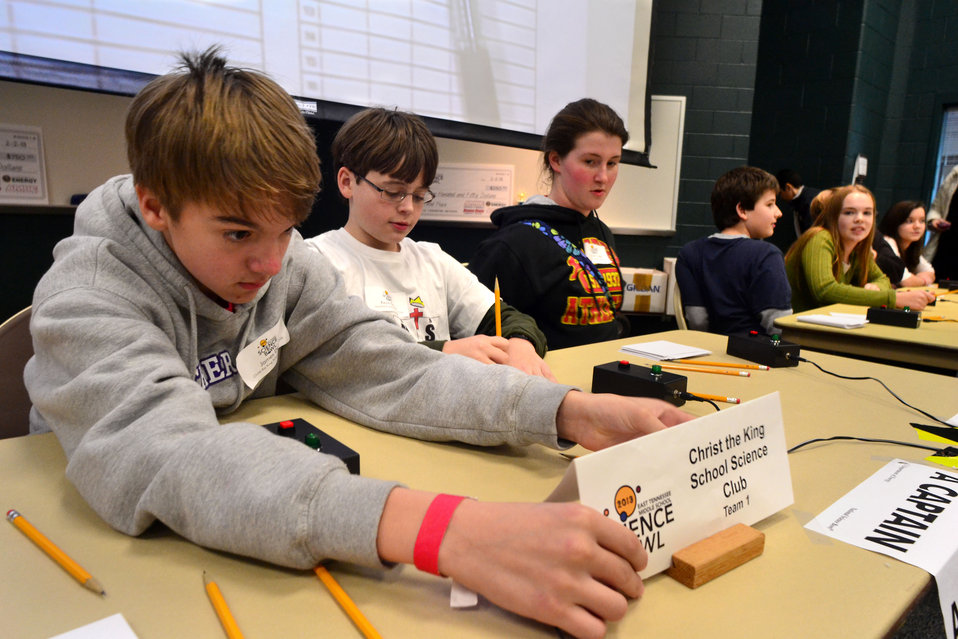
Christ the King School Second Place DOE Tennessee Middle School Science Bowl Oak Ridge

13-008 DOE photo Lynn Freeny DOE Tennessee Middle School Scence Bowl 2-2-2013 Oak Ridge Tennessee